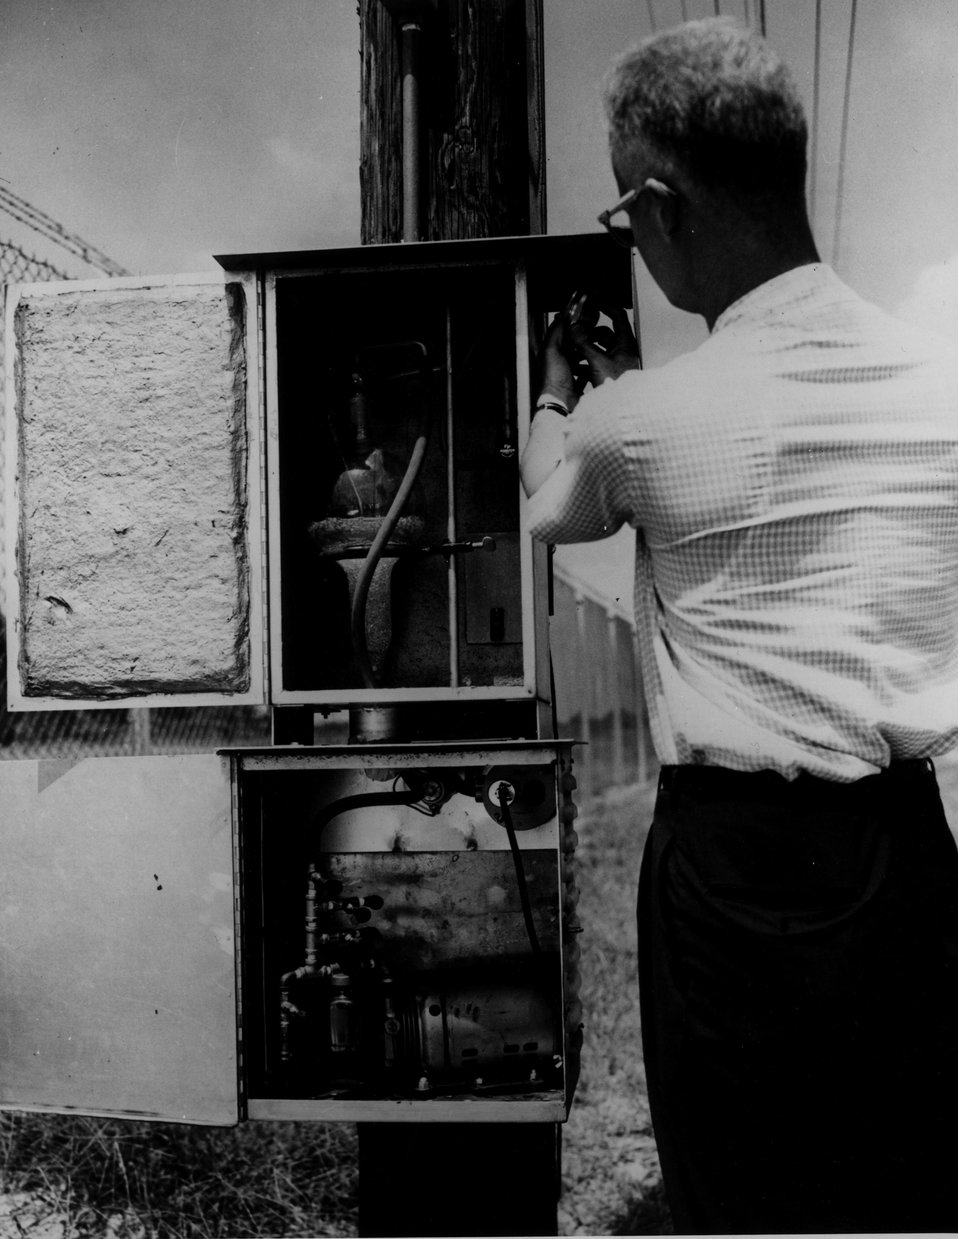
A continuous outdoor air sampler simultaneously collecting particles and gaseous contaminants from ambient air provides the means of measuring minute amounts of air contaminants. c. 1967